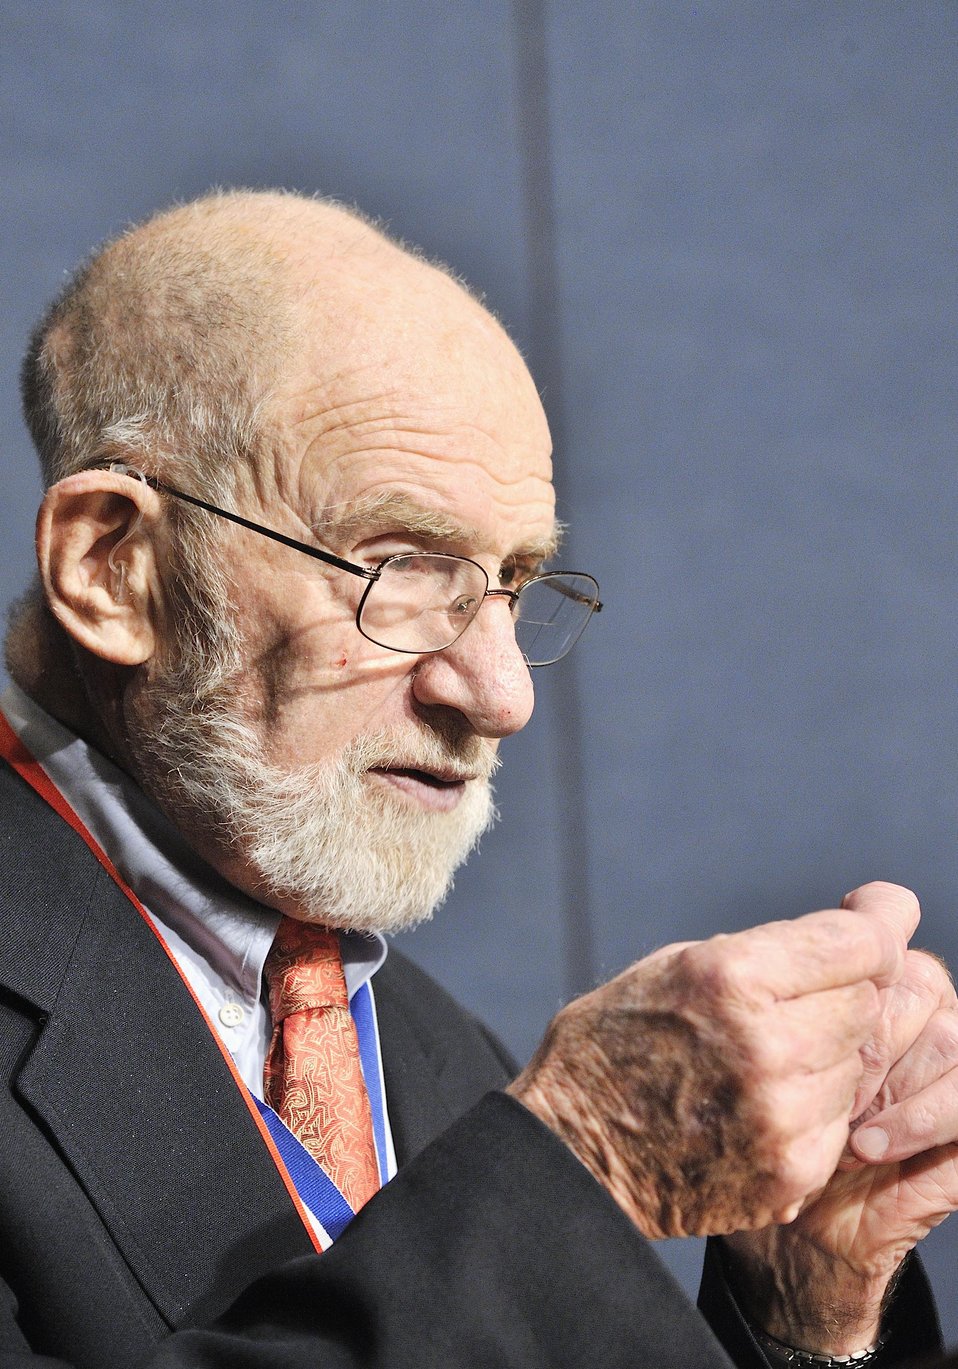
ANDREW SESSLER SPEAKS AT THE ENRICO FERMI AWARD ON FEBRUARY 3, 2014 AT THE U.S. DEPARTMENT OF ENERGY